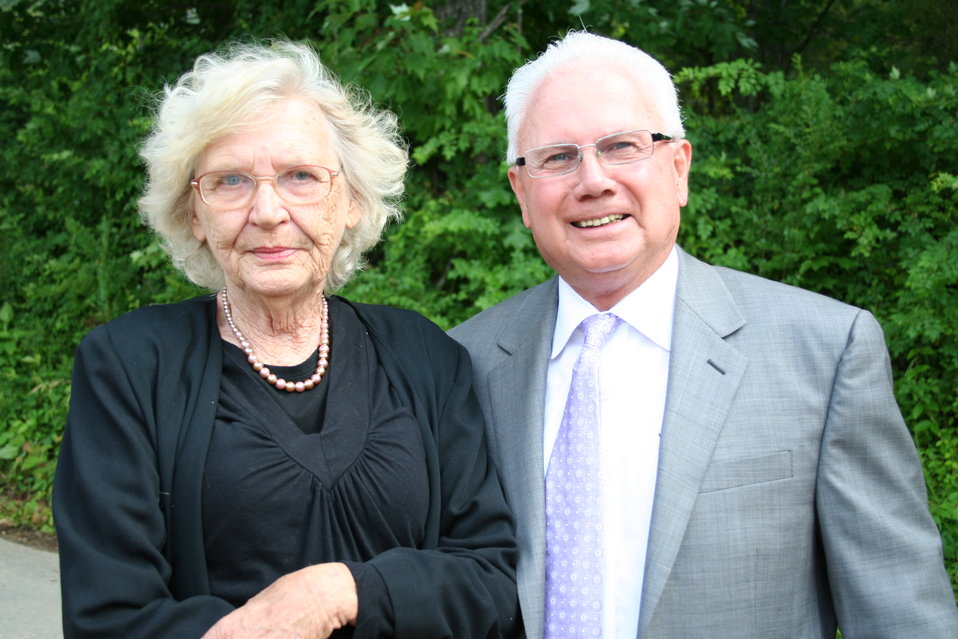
First time homeowner, 76-year-old Carol McCormack Arentz stands beside U.S. Department of Agriculture (USDA) Rural Development (RD) Kentucky State Director Tom Fern.